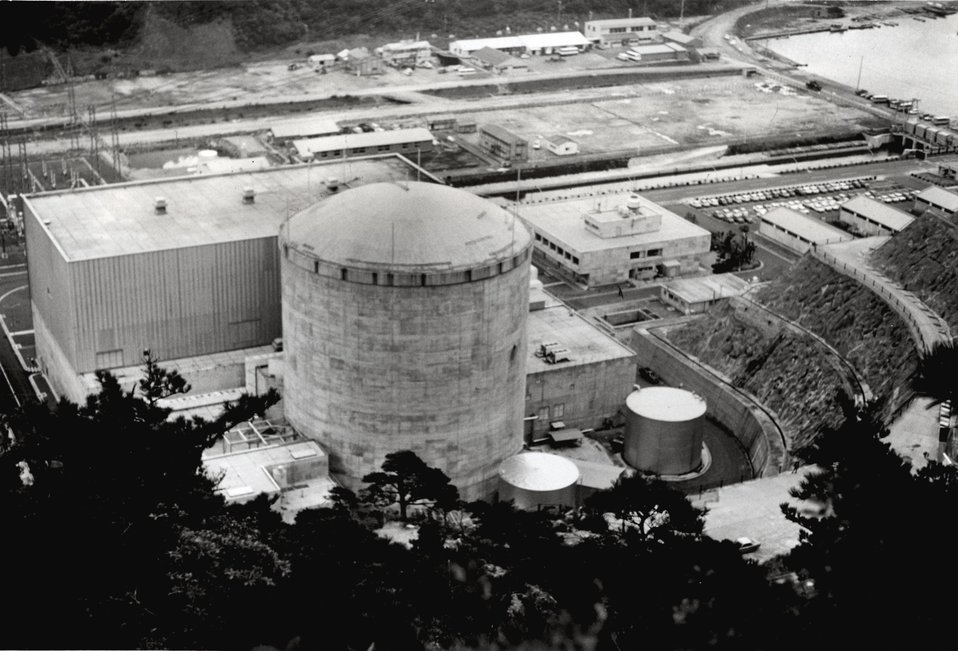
The Japan Atomic Power Company's (JAPCO) Tsuruga Nuclear Power Station, a 340,000 KWE BWR located on the western side of the Tsuruga Peninsula, Honshu, Japan. c. 1971